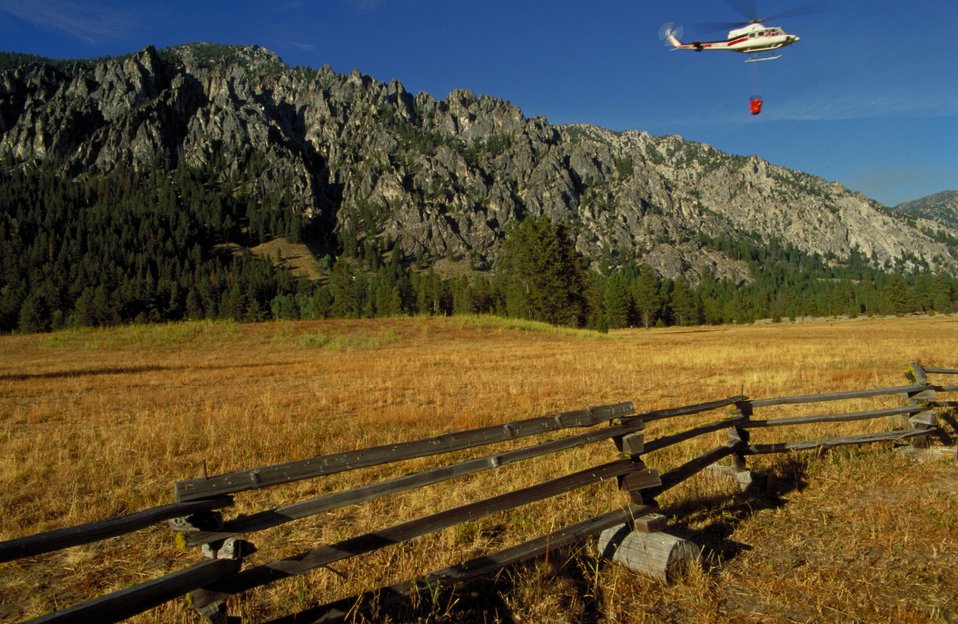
Helicopter with bucket Fire Season 2000 Lower Snake River District LSRD